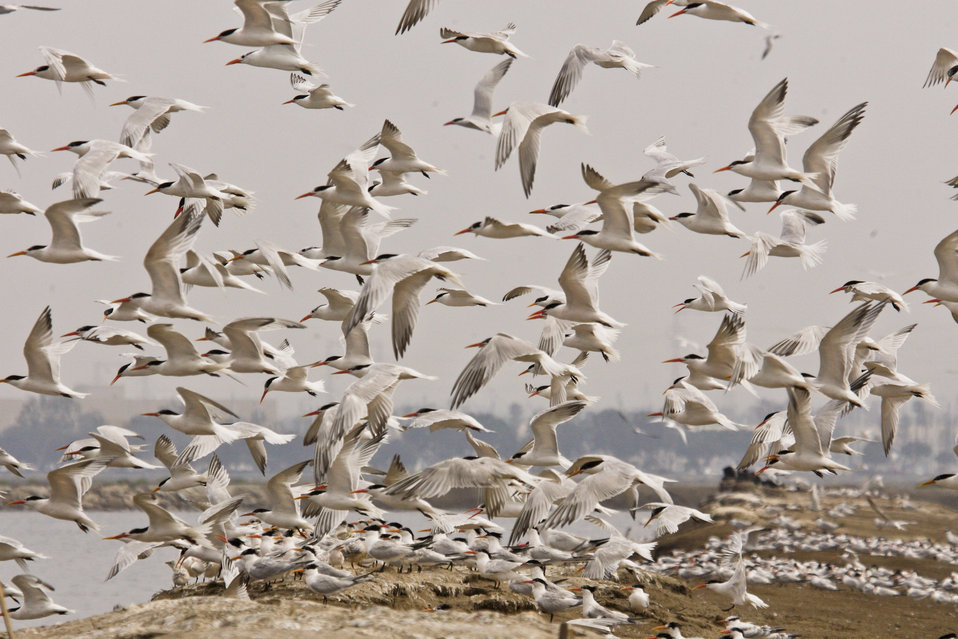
Elegant tern flock (Sterna elegans)